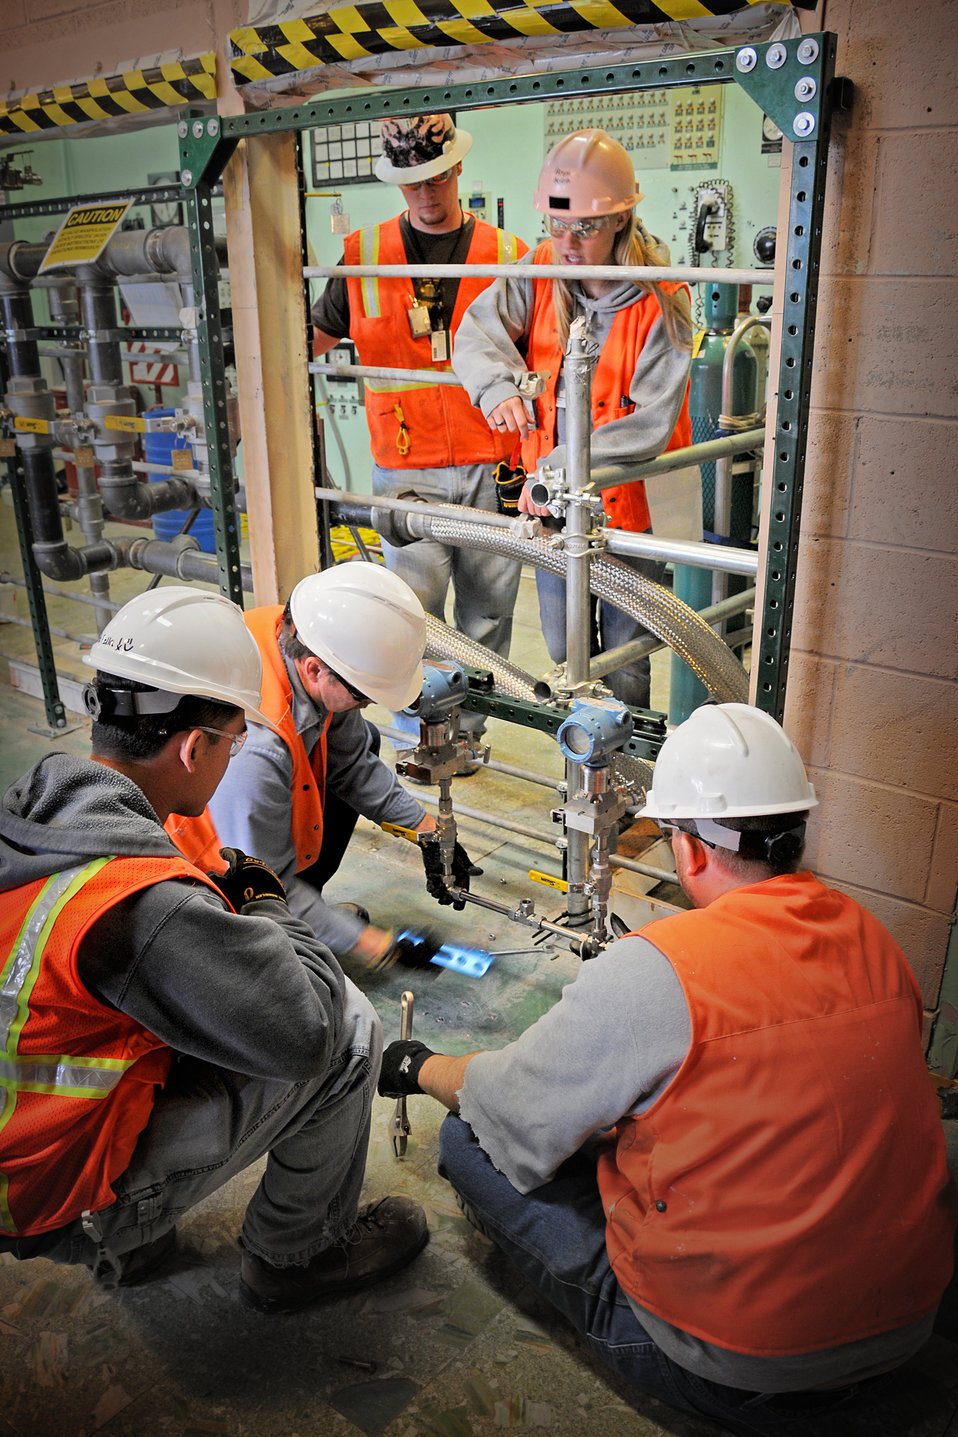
Recovery Act work

Decontamination and Demolition (D&D) workers are checking instrumentation that will be used for sodium treatment as part of an effort to demolish the Experimental Breeder Reactor-II at the Materials and Fuels Complex of the Idaho National Laboratory. This project is being funded through ARRA.